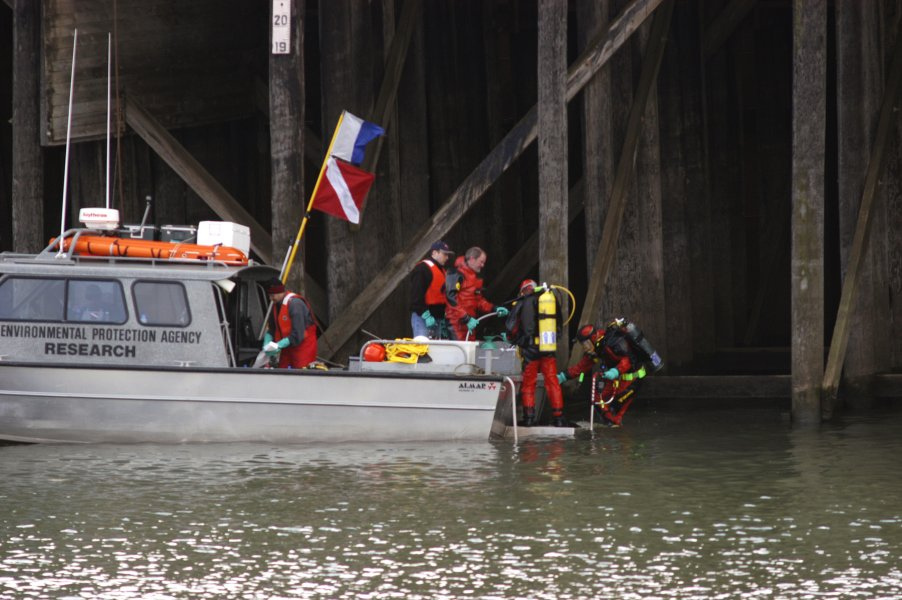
Portland Harbor, Oregon sediment sampling

EPA divers deploy off the stern of an EPA vessel to take sediment core samples within the Portland Harbor Superfund Site.

Those bottom samples are analyzed in EPA certified labs to determine whether the area must be dredged, capped, or otherwise cleaned up.

For more information on these dives, see: www.epa.gov/region10/pdf/diveteam/terminal 4 2004.pdf

EPA Region Pacific Northwest Dive Team: www.epa.gov/region10/dive